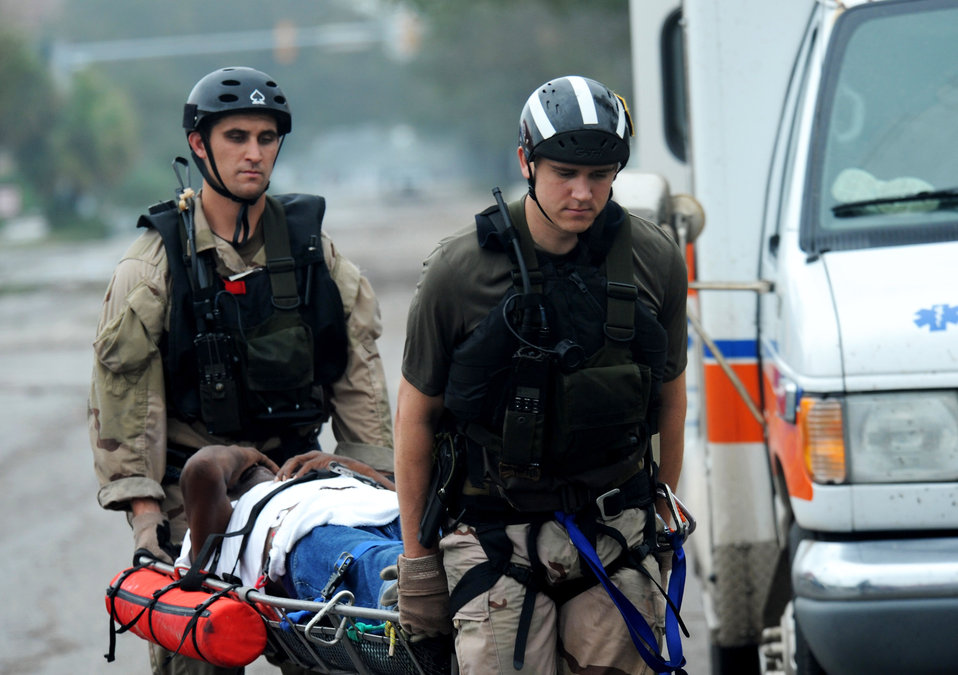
Airmen conduct search, rescue

Staff Sgt. Lopaka Mounts (left) and Senior Airman Brandon Smith,cross-load an injured Galveston, Texas, resident from an ambulance for air evacuation during search and rescue operations after Hurricane Ike, Sept. 13. Sergeant Mounts and Airman Smith are both pararescueman assigned to the 331st Air Expeditionary Group at Randolph Air Force Base, Texas.